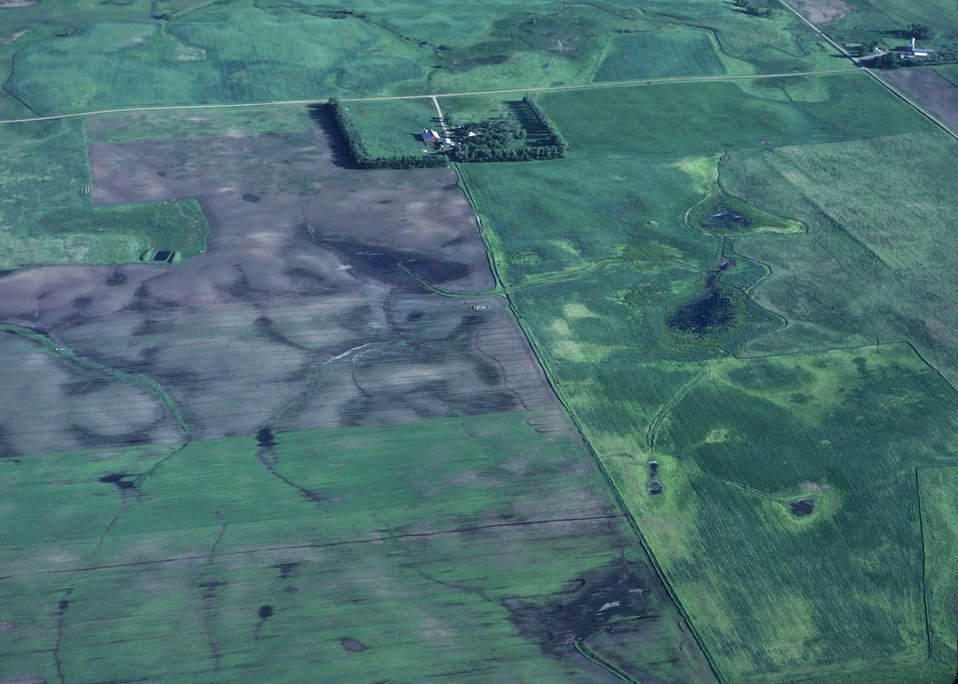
Prarie potholes provide an abundance of vital habitat for wildlife.